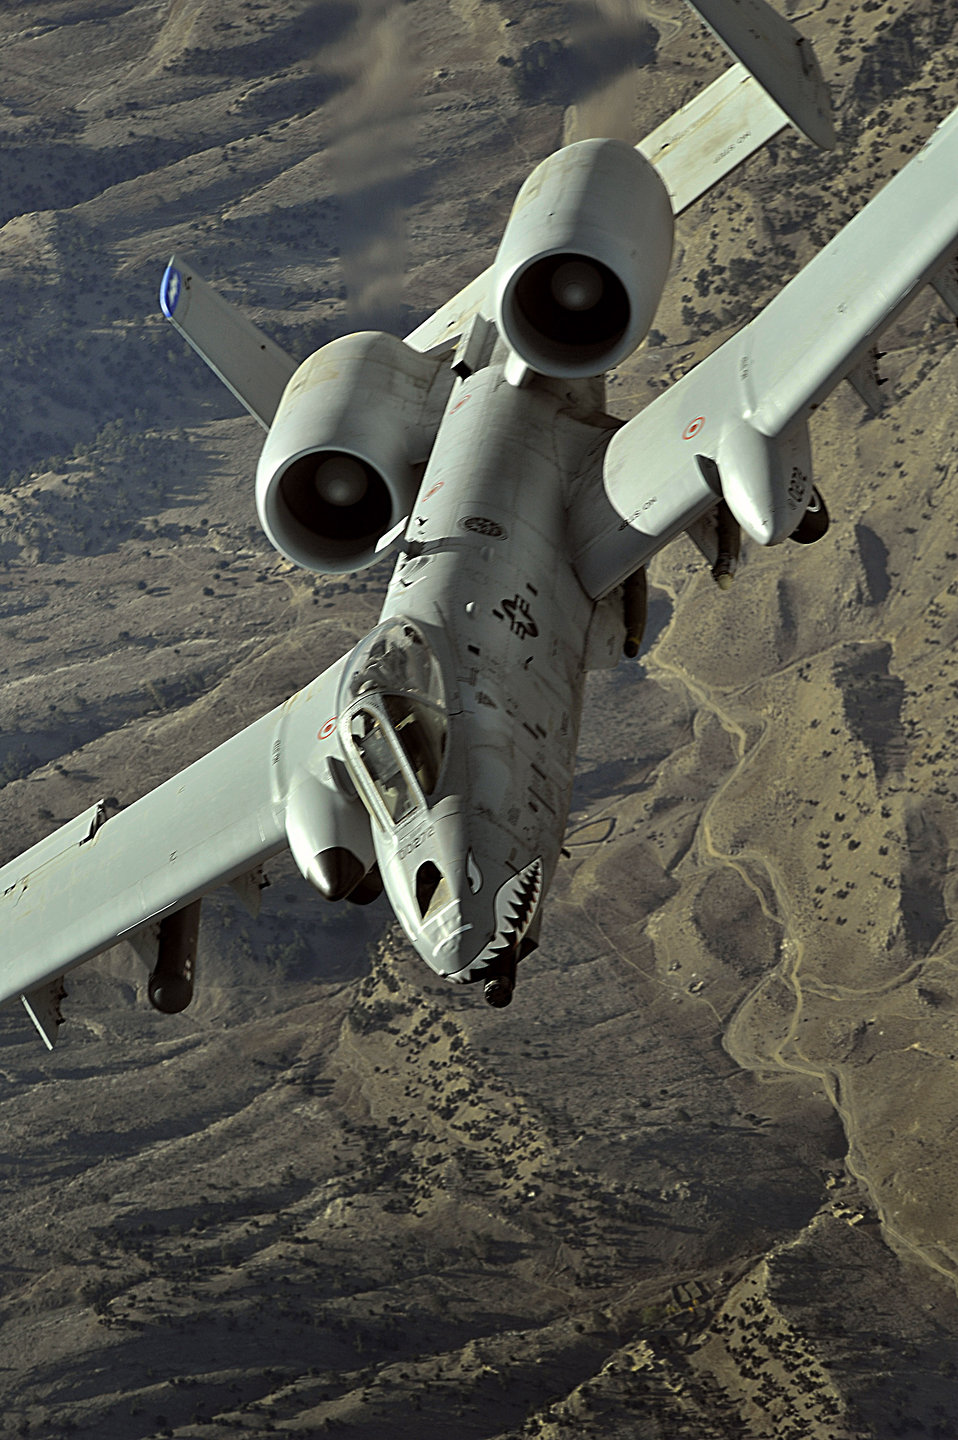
Flying high in the sky

An A-10 Thunderbolt II flies a close-air-support mission over Afghanistan on Nov. 7. The A-10 has excellent maneuverability at low air speeds and altitude, and are highly accurate weapons-delivery platforms.